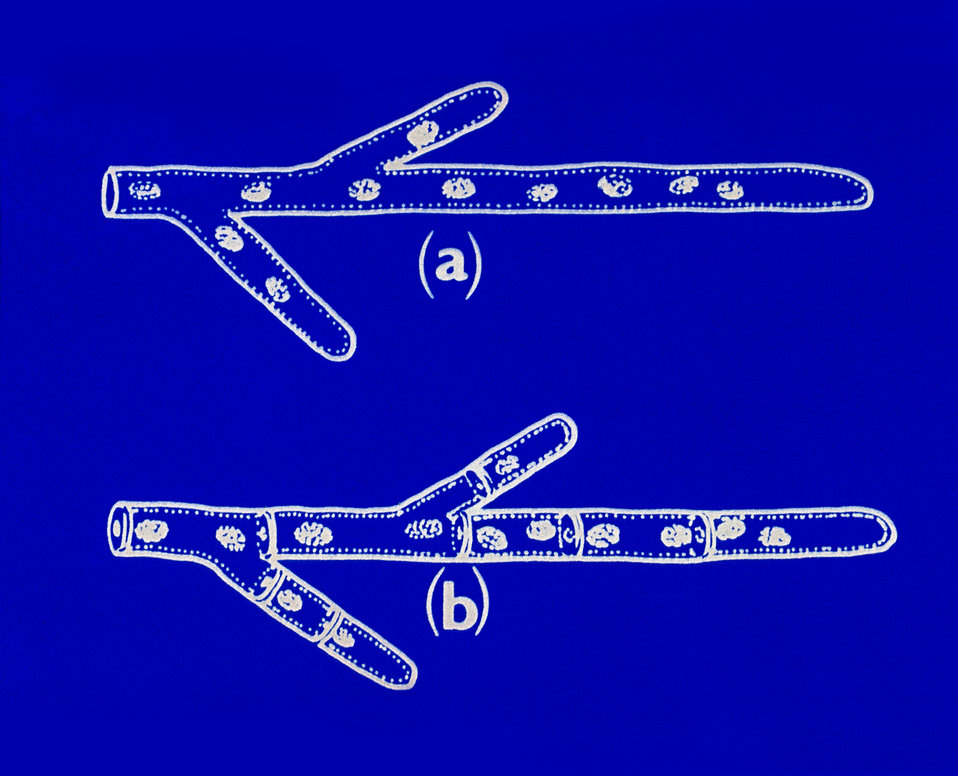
This illustration depicts some of the ultrastructural morphology displayed by hyphae without (a), and with (b) crosswalls.